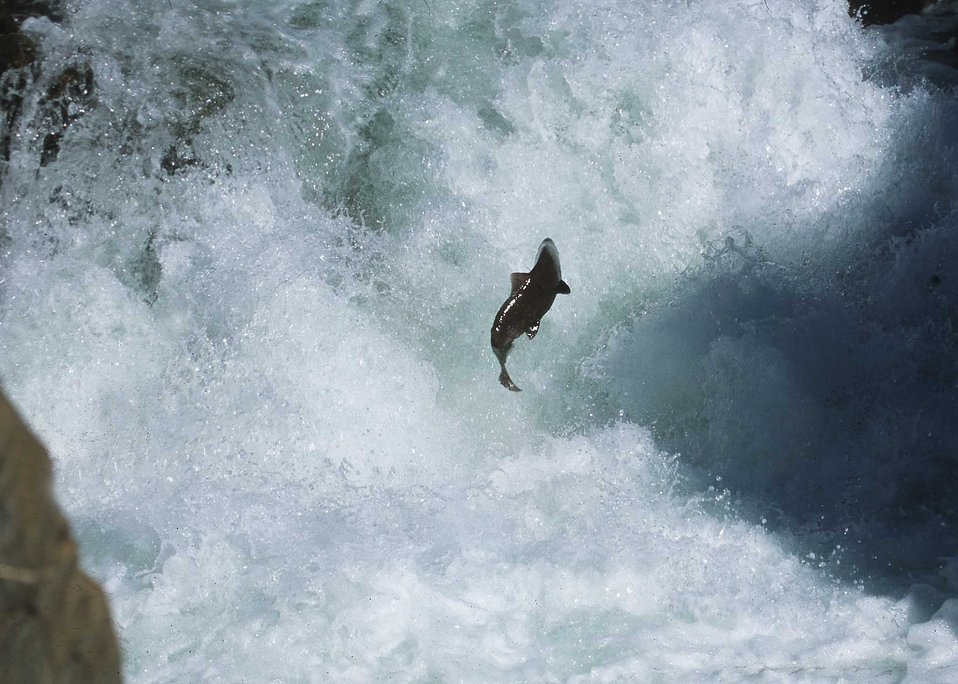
Salmon jumping.